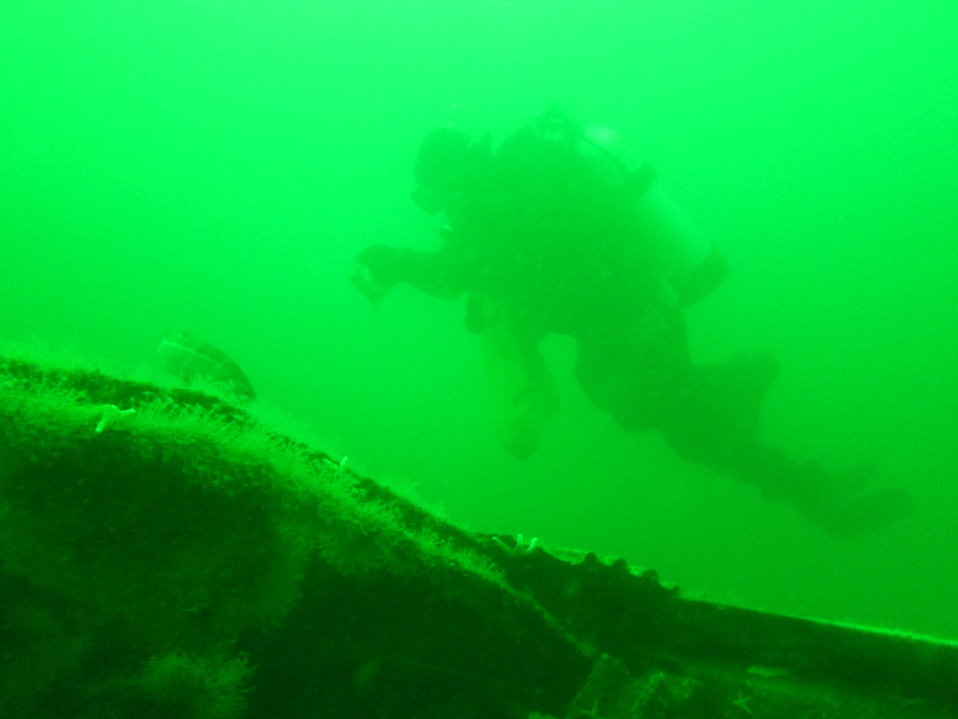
Sunken subway car or habitat?

Try both! In June 2011, from EPA's research ship the OSV Bold, divers from the mid Atlantic region studied an area known as Redbird Reef off the coast of Delaware. There, subway cars have been intentionally sunk, or scuttled, to create artificial reefs as additional habitat for marine life.

The dive teams recorded the life that was growing on the cars, as well as fish and other marine life that was nearby. As you can see, the visibility down there isn't easy to work with. EPA Region 3 diver Steven Donohue remarks, 'Yes we are the land of green water and are very excited when we can see our own hands and feet, let alone a whole subway car!'

In this murky photo, Dennis Orenshaw, Region 3 surveys sunken subway car. Photo by David Byro, EPA.

EPA's mid Atlantic region more locally serves Delaware, the District of Columbia, Maryland, Pennsylvania, Virginia, and West Virginia.